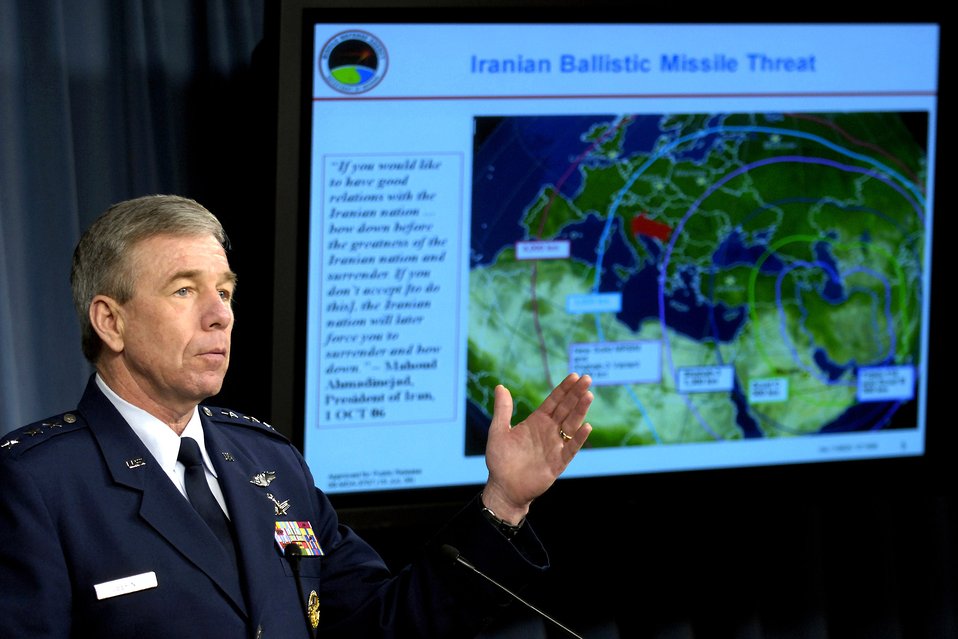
US Missile Defense Program

Lt. Gen. Henry Obering holds a press conference on the status of the the U.S. Missile Defense Program at the Pentagon July 15. General Obering is the U.S. Missile Defense Agency director.